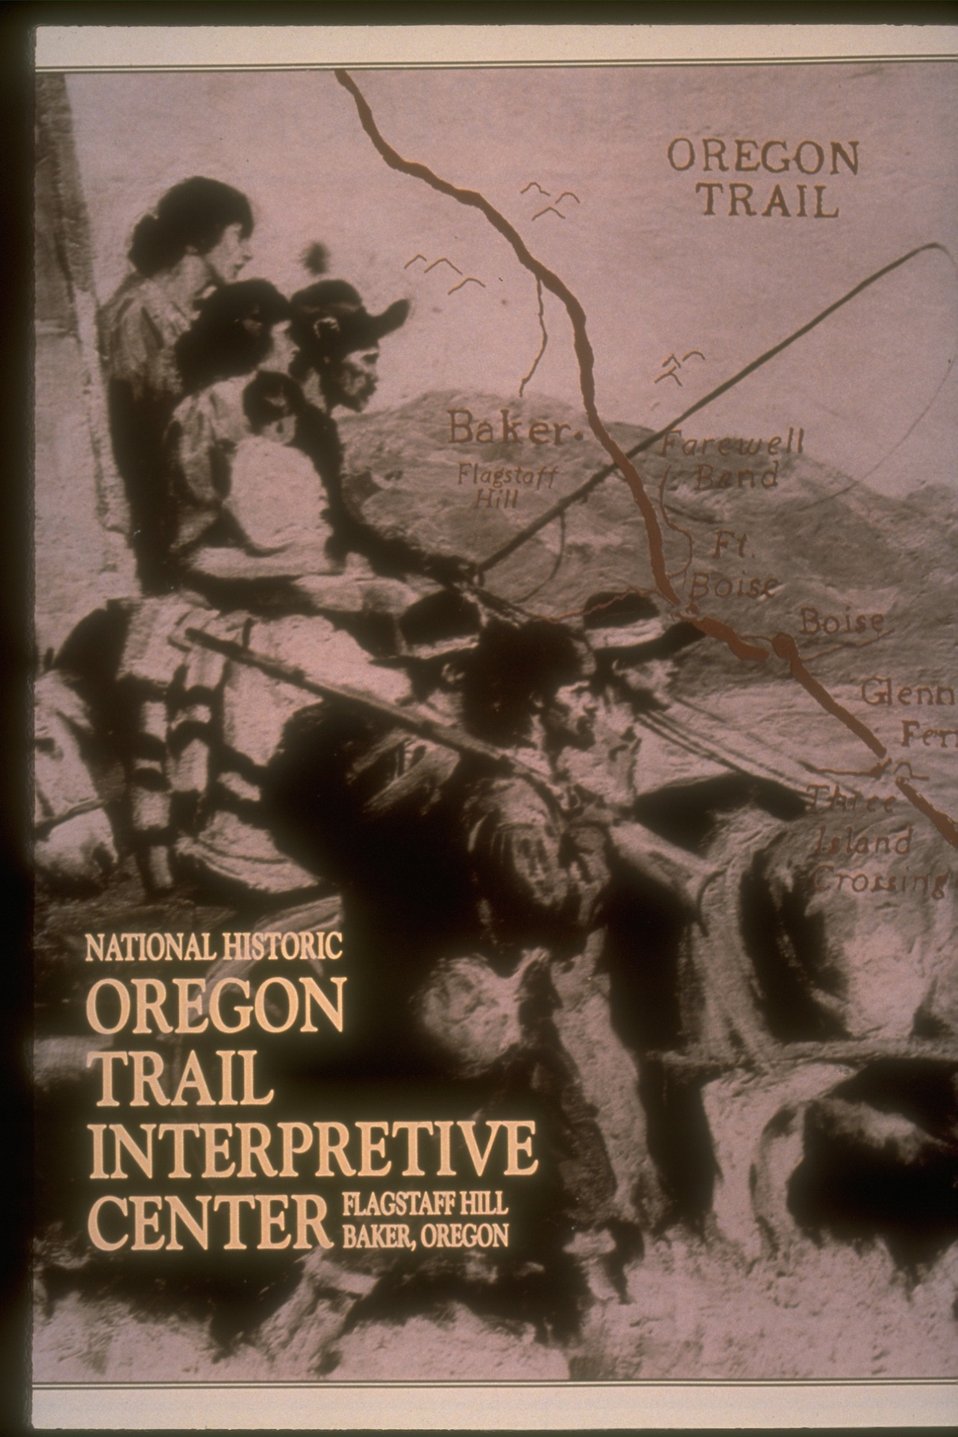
Historic brochure on display at the NHOTIC reading: "National Historical Oregon Trail Interpretive Center. Flagstaff Hill. Baker, Oregon.